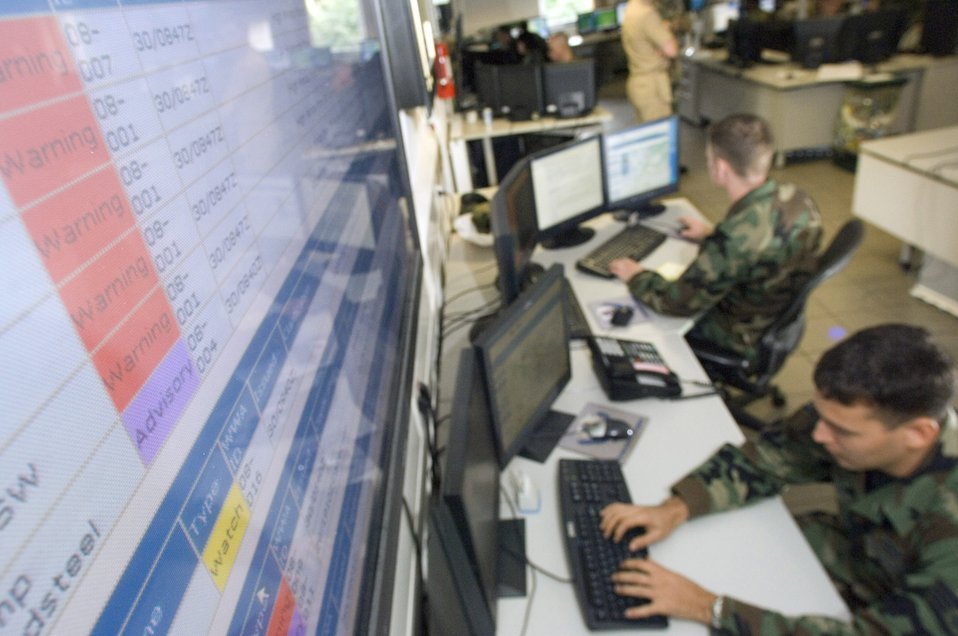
Air Force, Navy weather forecasters form one front

The 20th Operational Weather Squadron forecasters at Sembach Air Base, Germany, forecast weather for Europe and its surrounding bodies of water.